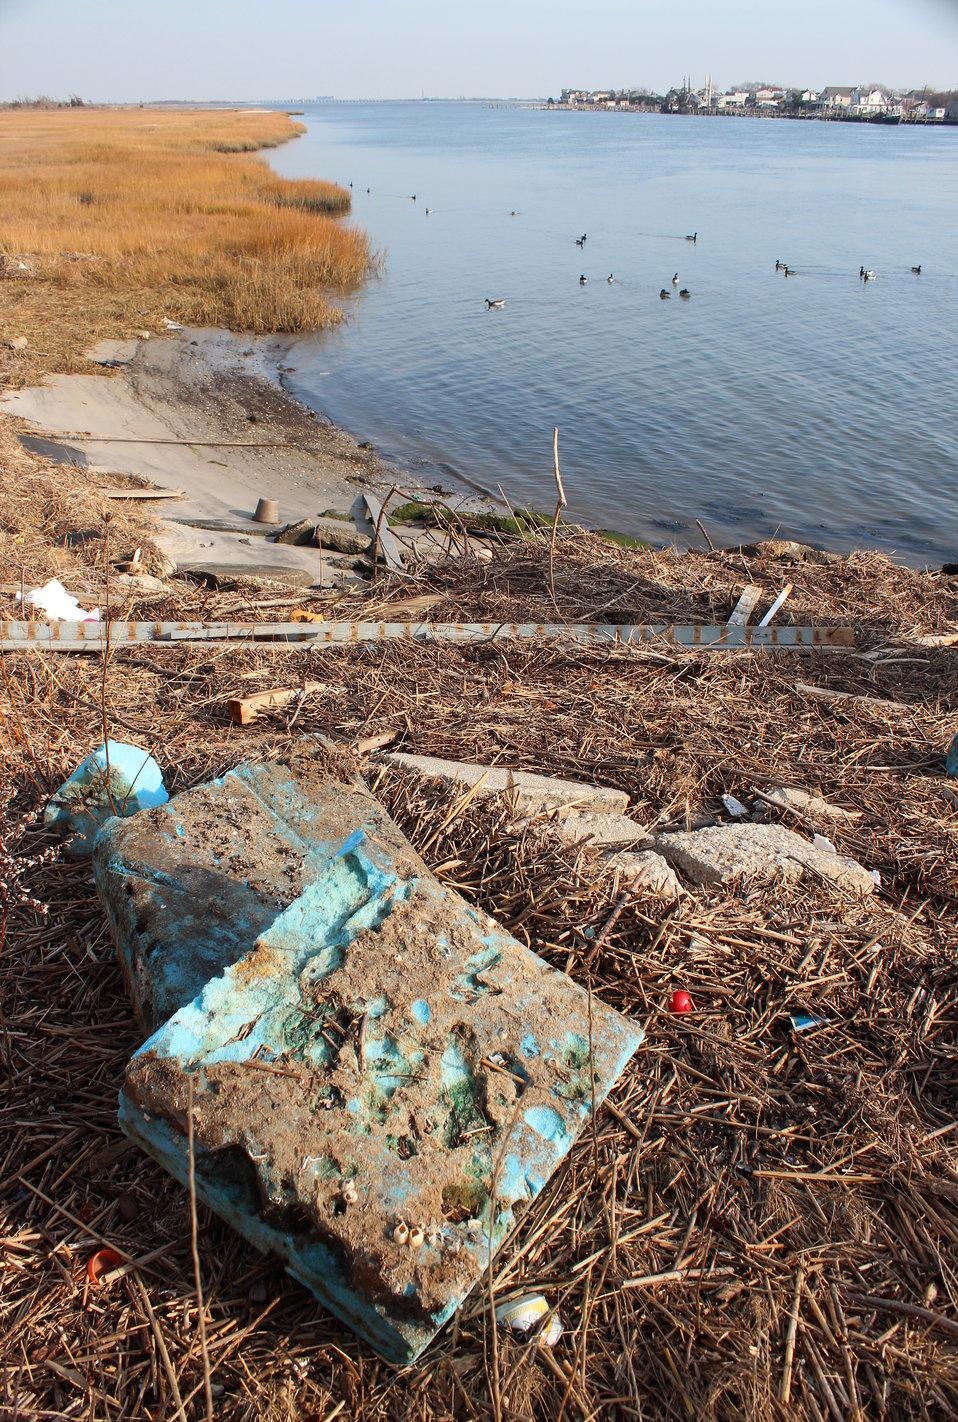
December 3, 2012 – Leftover debris from Hurricane Sandy

EPA response teams are scanning the shorelines and removing hazardous items, but a significant amount of general litter and debris remains behind.